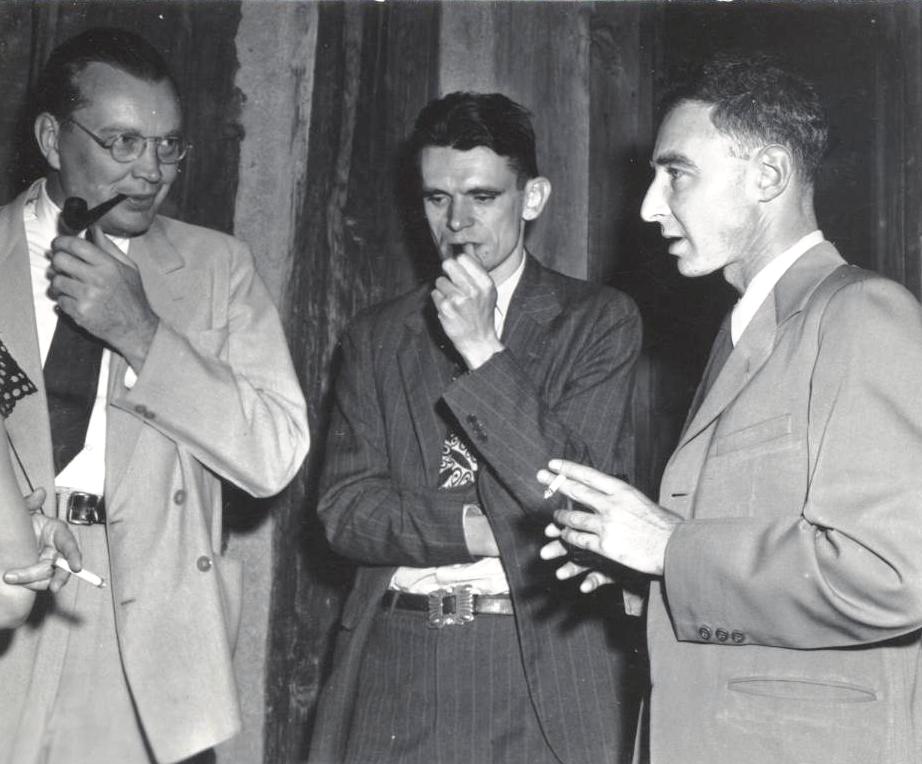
JETTE CRITCHFIELD AND ROBERT OPPENHEIMER